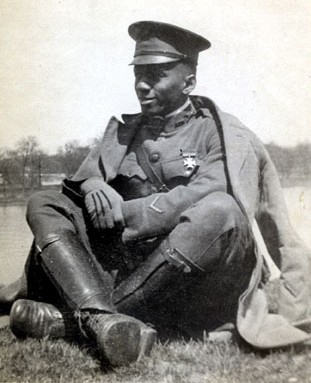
William J. Powell: Promoted African-American involvement in aviation

Lt. William J. Powell as an infantry officer during World War I.